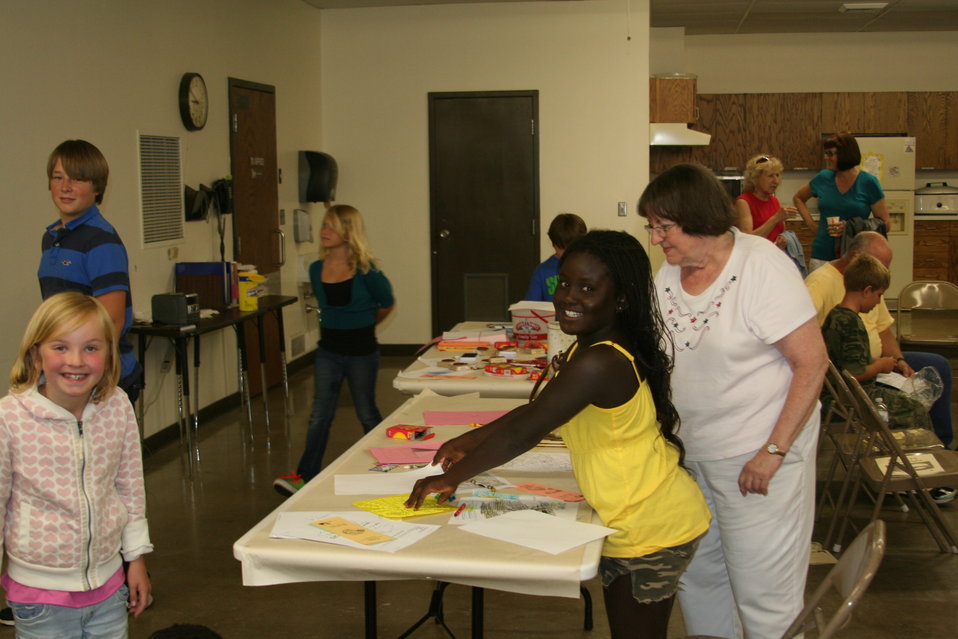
Creatures of the Night 2011